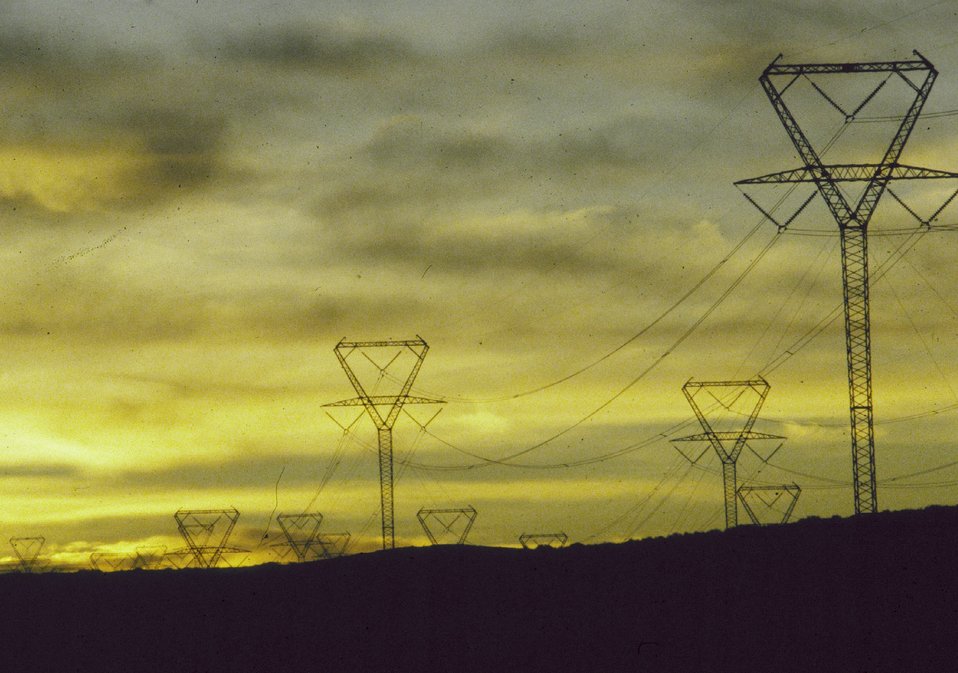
Transmission lines in the sunset in Southwest Wyoming.